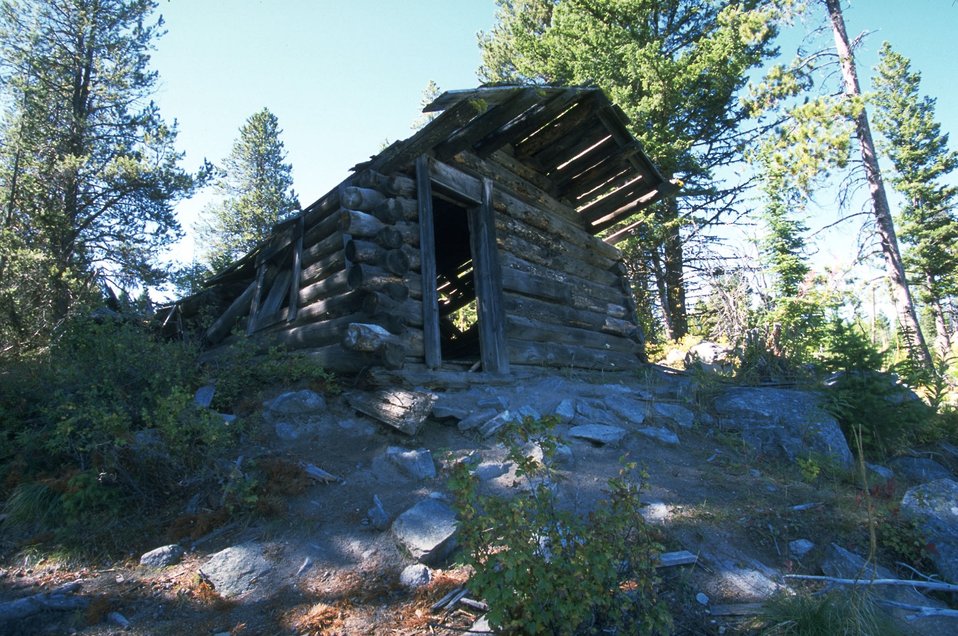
Coloma Ghost Town--collapsing cabin